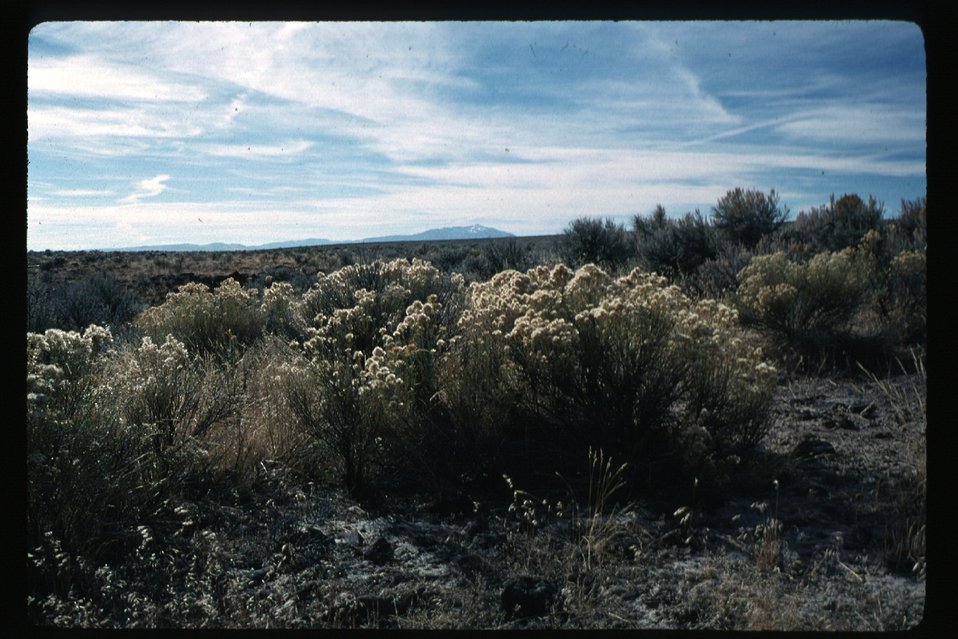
Brush Scenic Owyhee Field Office LSRD Lower Snake River District